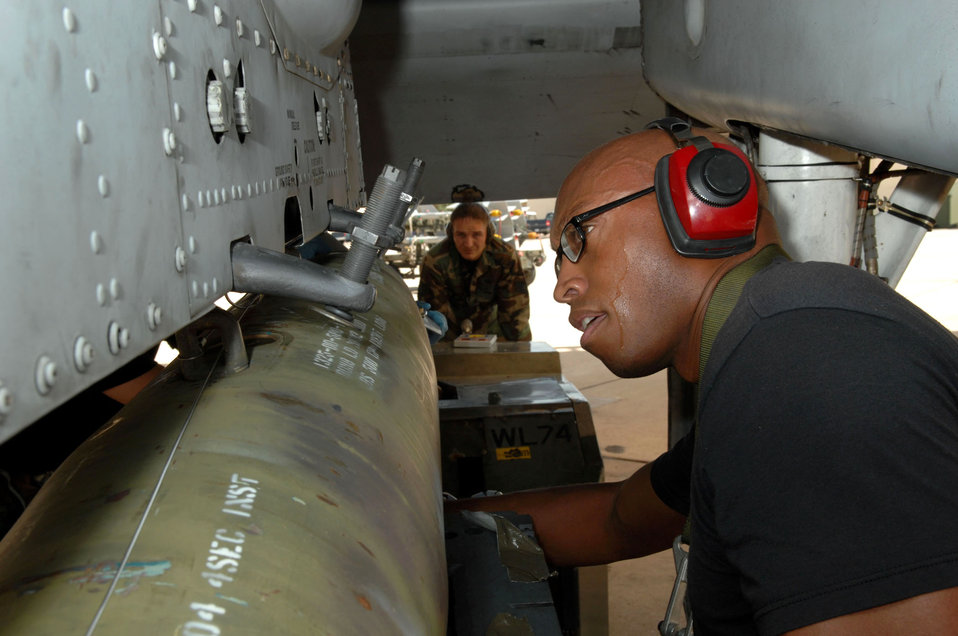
Load crew competition

Staff Sgt. Roland Harvey ensures that an MK-82 and its firing wire are properly aligned before mounting them to the A-10 Thunderbolt II during the quarterly load crew competition July 20 at Davis-Monthan Air Force Base, Ariz. His technique is critiqued by a judge. The event is used to boost group morale while enhancing warfighting skills. Sergeant Harvey is assigned to the 357th Aircraft Maintenance Unit.